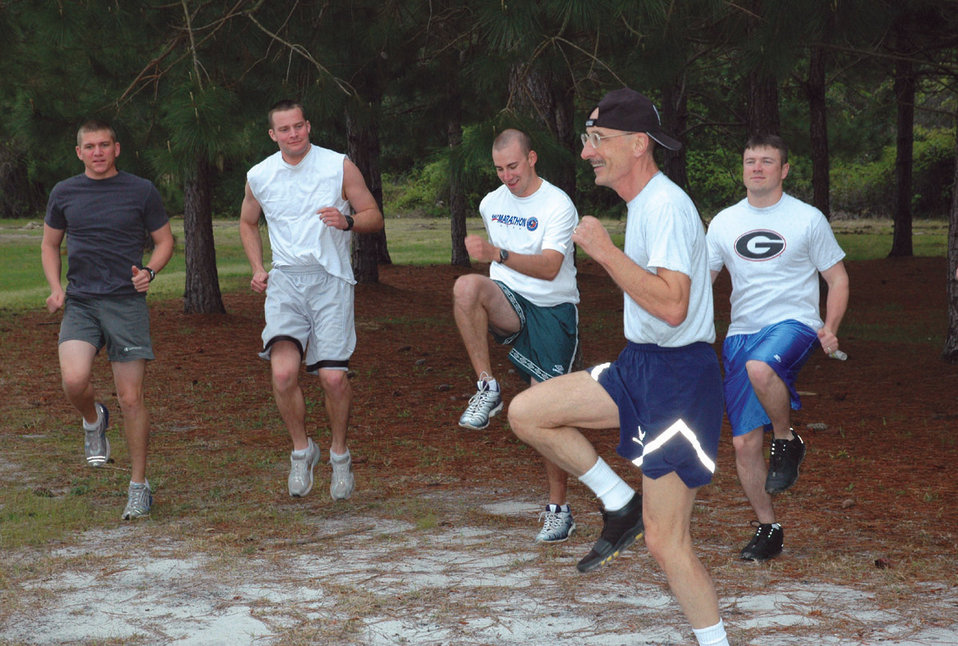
66-year-old officer aces annual fitness test

Lt. Col. (Dr.) Daniel Kulund trains at Tyndall Air Force Base, Fla. Colonel Kulund is a fitness and wellness advocate and chief of medicine at the Tyndall medical clinic. The 66-year-old Air Force officer got a perfect score on his annual military physical fitness test for the second year in a row.